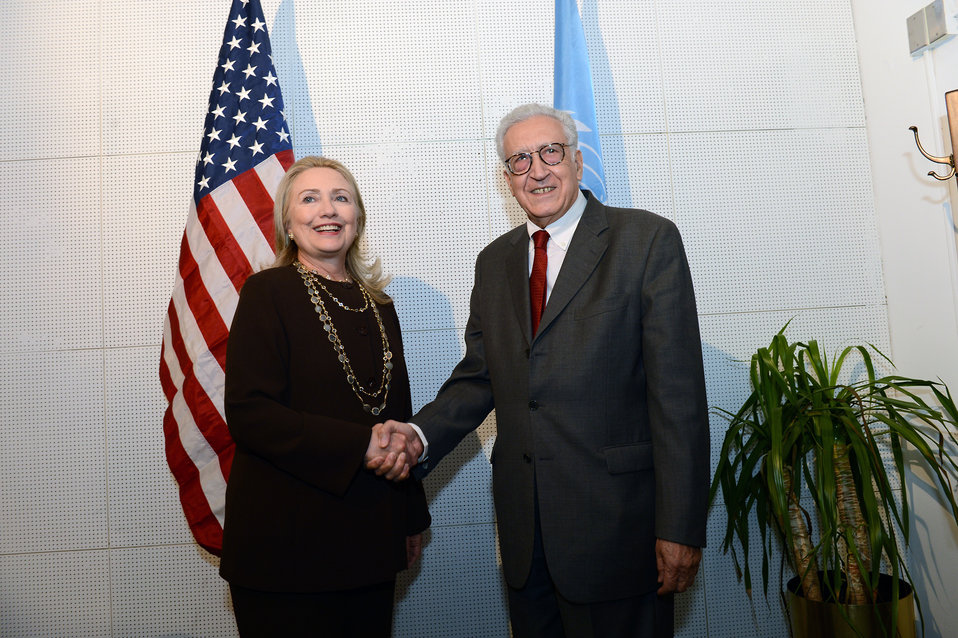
Secretary Clinton Meets With Special Representative for Syria Brahimi

U.S. Secretary of State Hillary Rodham Clinton meets with United Nations Secretary General’s Special Representative for Syria Lakhdar Brahimin at the United Nations in New York, New York on September 25, 2012.